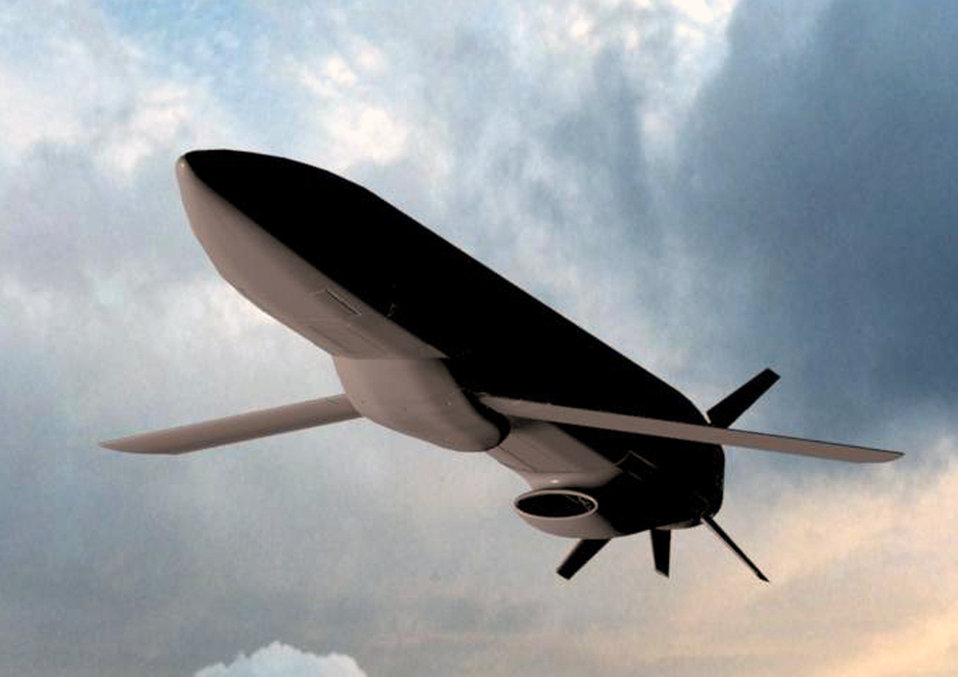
Decoy

COURTESY COMPUTER ILLUSTRATION -- The miniature air-launched decoy will be a small, cruise missile-like vehicle about 115 inches long, eight inches in diameter, with a 60-inch wingspan. It will weigh only 200 pounds and will be launched from both fighters and bombers.